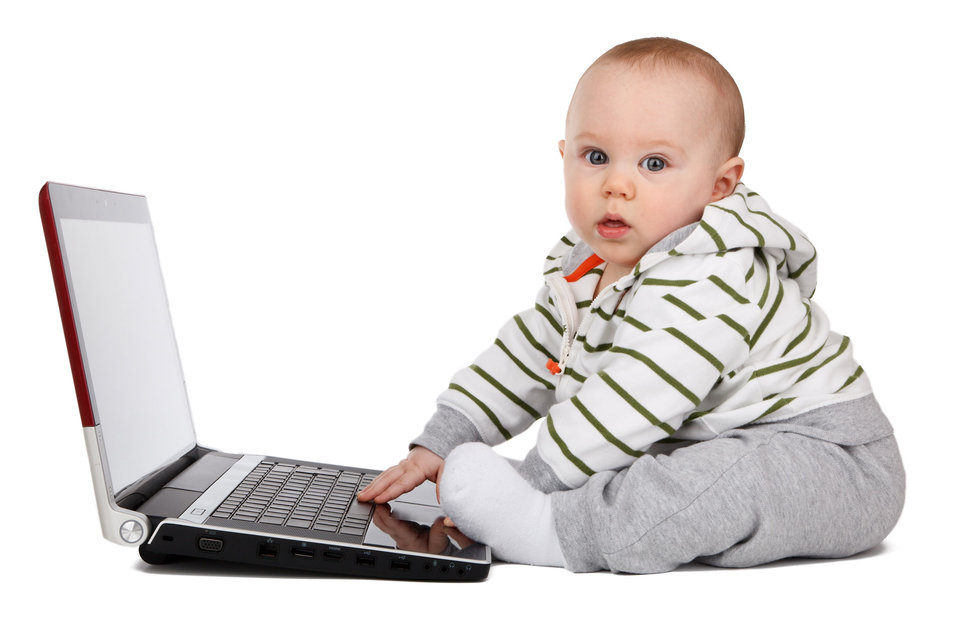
Baby with a laptop

Young baby working on a laptop isolated on white background.